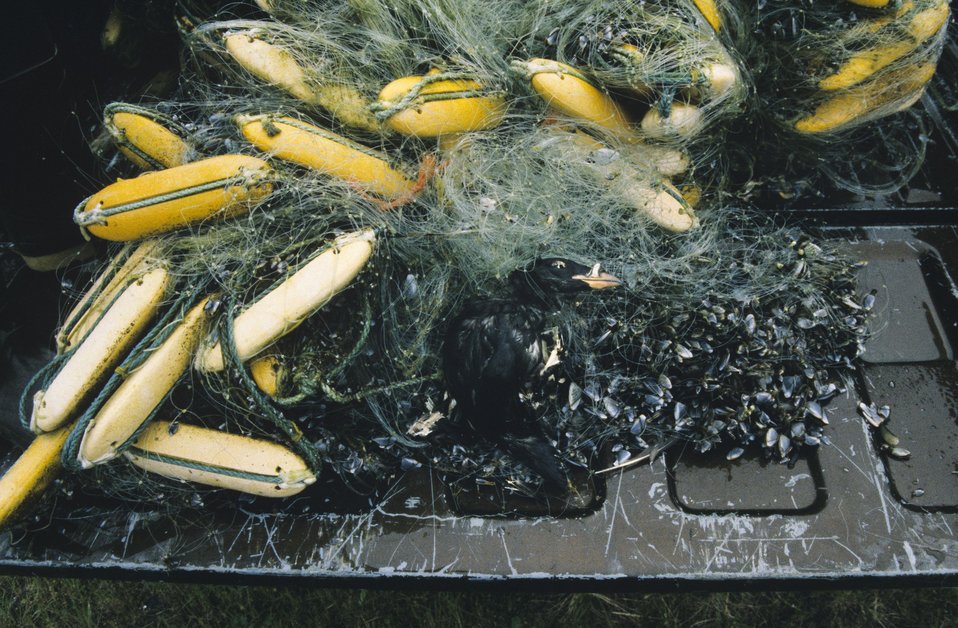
Drift net with bird 3

A rhino caught in a drift net.